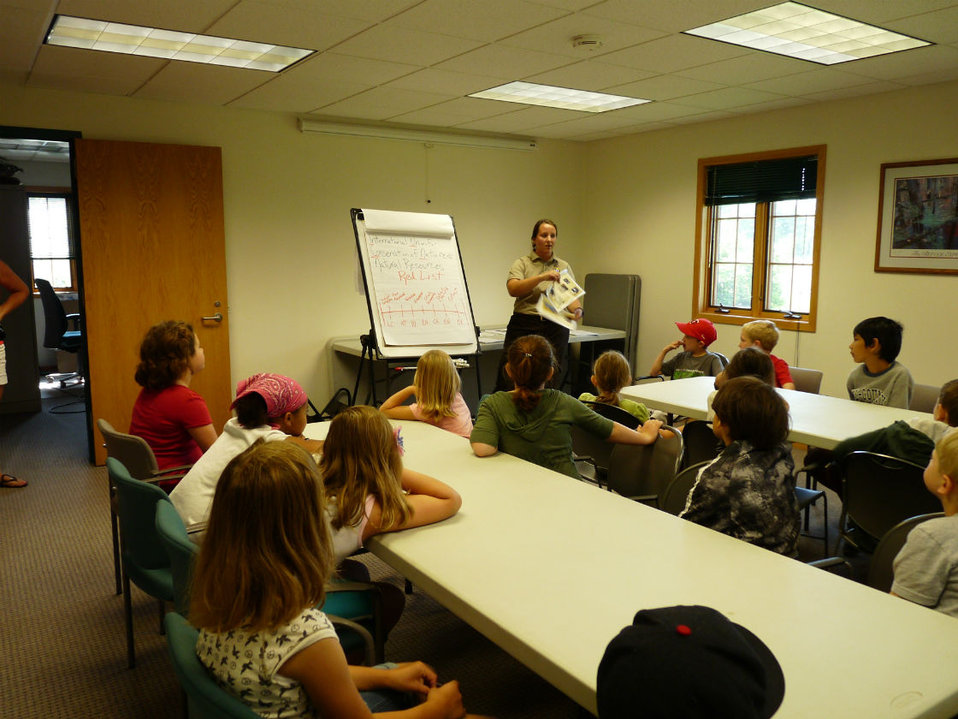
SCEP Intern Laurel Heino teaches about the Giant Panda

SCEP intern Laurel Heino teaches area youth about the conservation status of the giant panda.